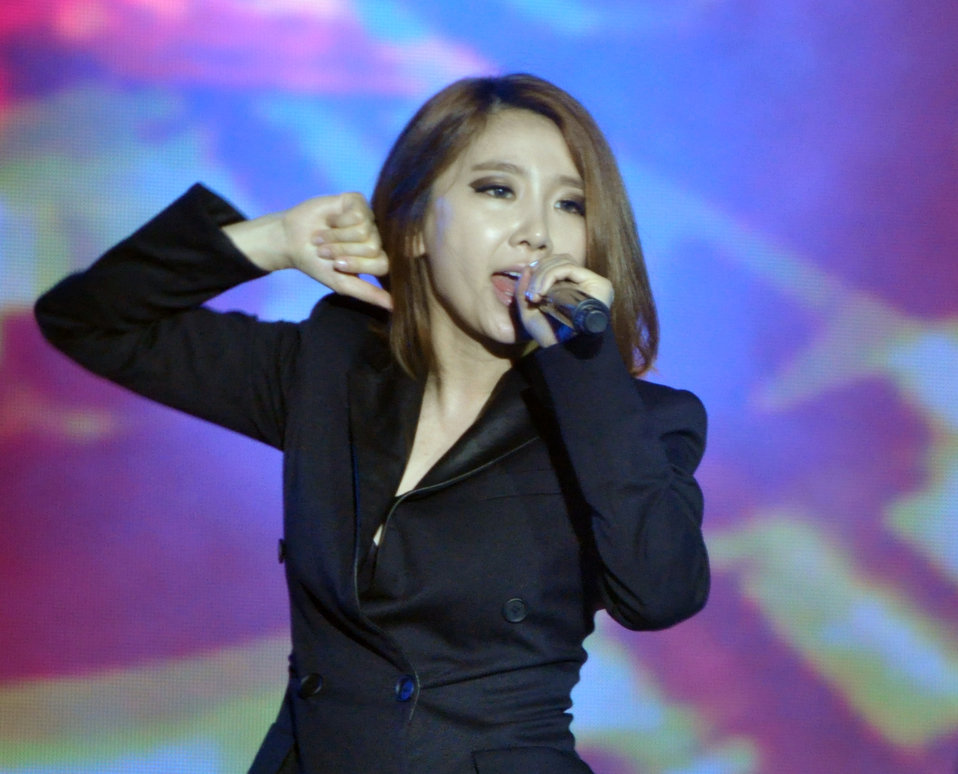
Brown Eyed Girls perform at MTV EXIT concert in Hanoi against human trafficking

USAID co-sponsors MTV EXIT concert, campaign against human trafficking